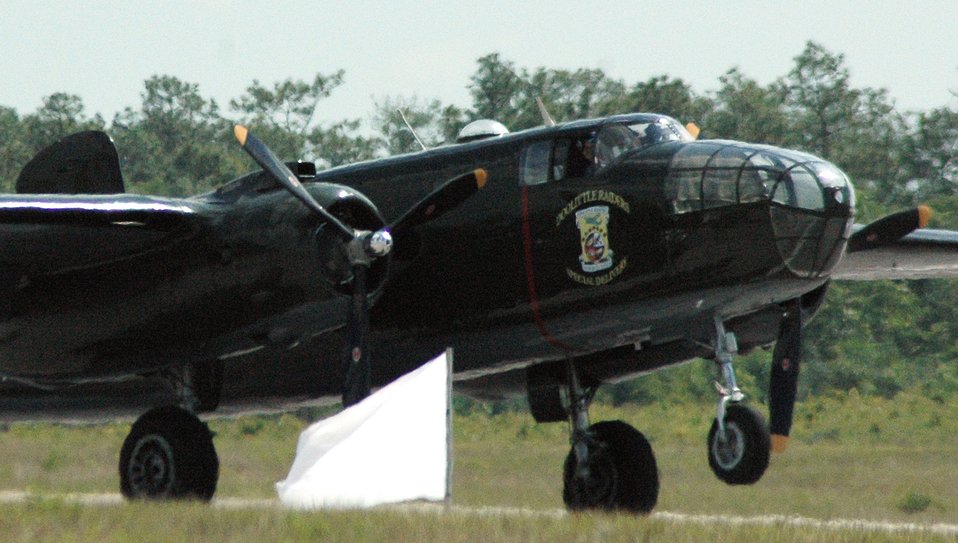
Raider reenactment

During a training reenactment May 31 at Duke Field, Fla., Larry Gregory, pilot of the B-25 Mitchell